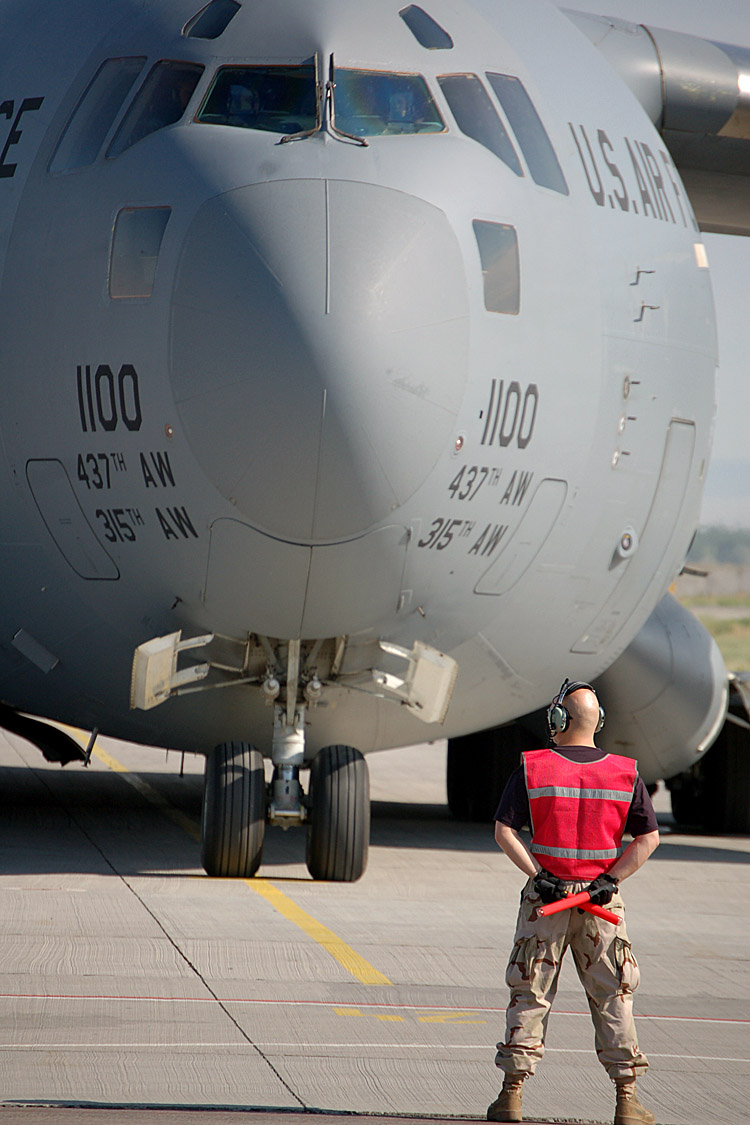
Airpower Summary for July 2, 2007

An Airman assigned to the 376th Air Expeditionary Wing at Manas Air Base, Kyrgyzstan, waits for a C-17 Globemaster III aircrew to finish their final preflight checks. C-17s and C-130 Hercules flew 178 airlift sorties July 2 moving 2,090 personnel around the area of responsibility.